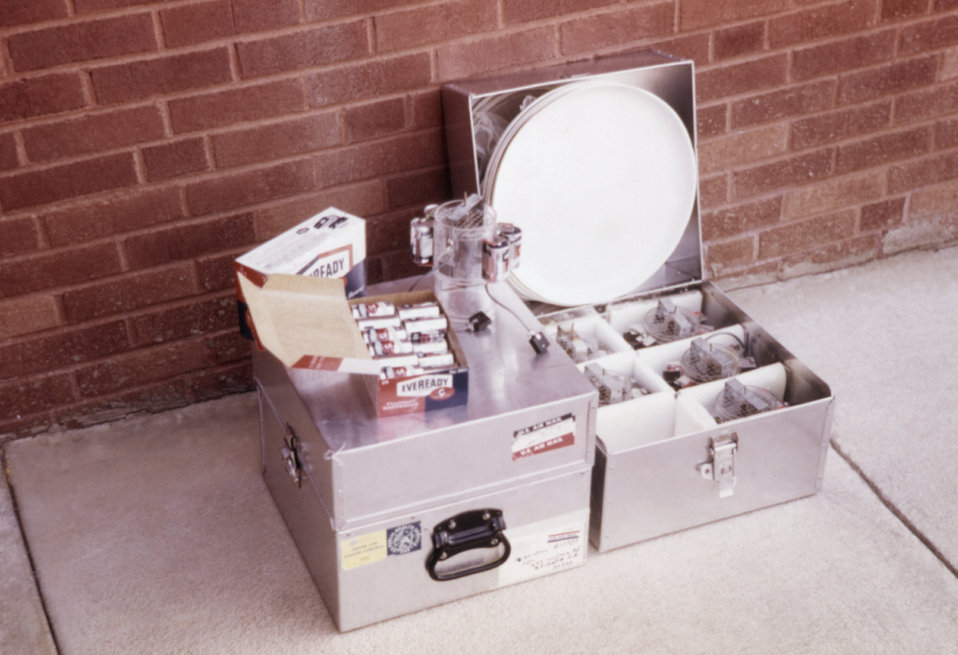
This 1980 photograph shows field carrying cases containing CDC light trap equipment used in arbovirus field studies.